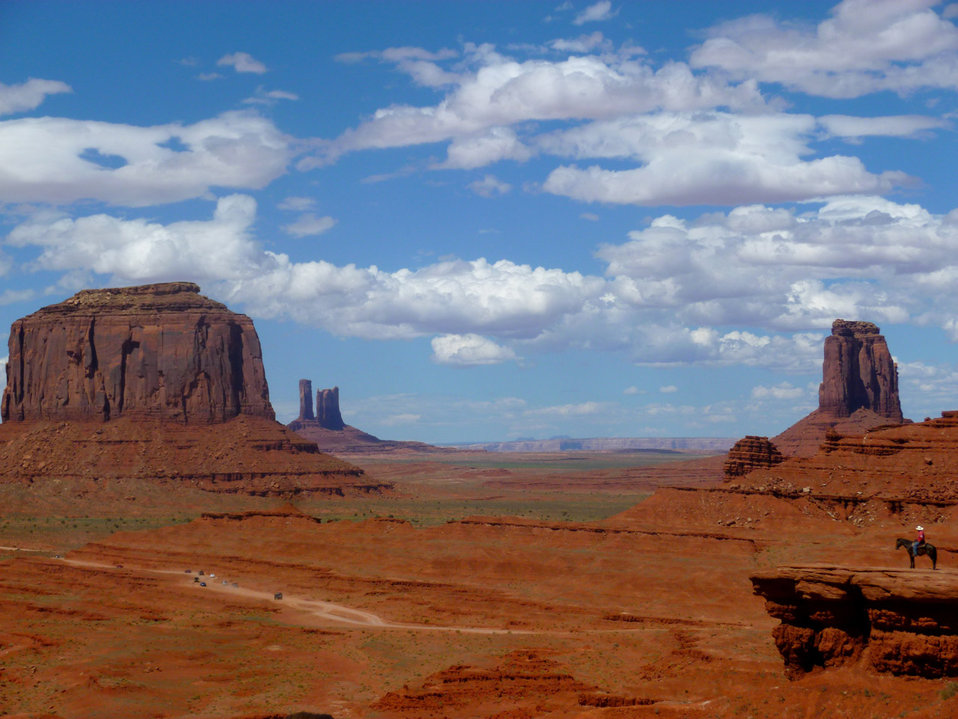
Monument valley, we can easily imagine riding in that red ocher landscape..